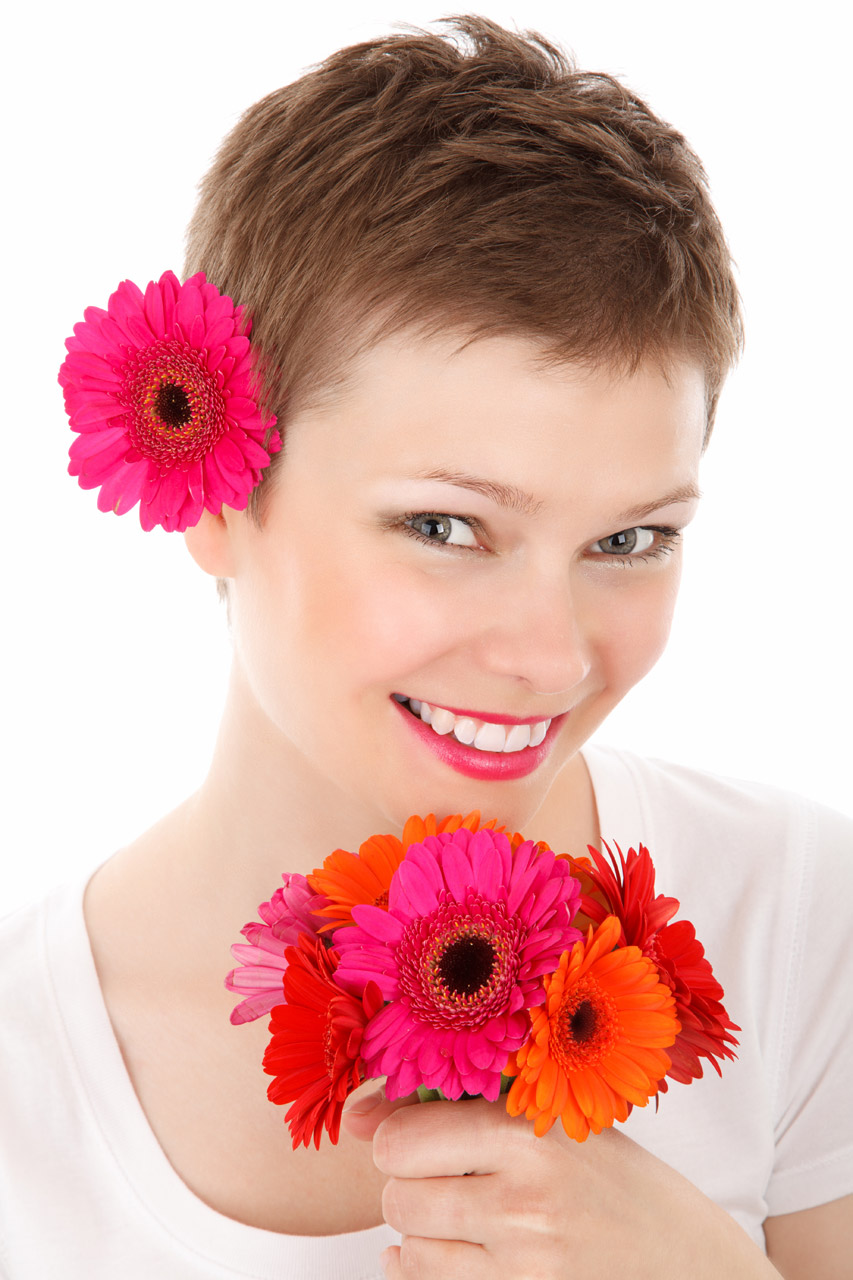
Flowers in hair

Young woman wearing flowers in her hair isolated on white background.